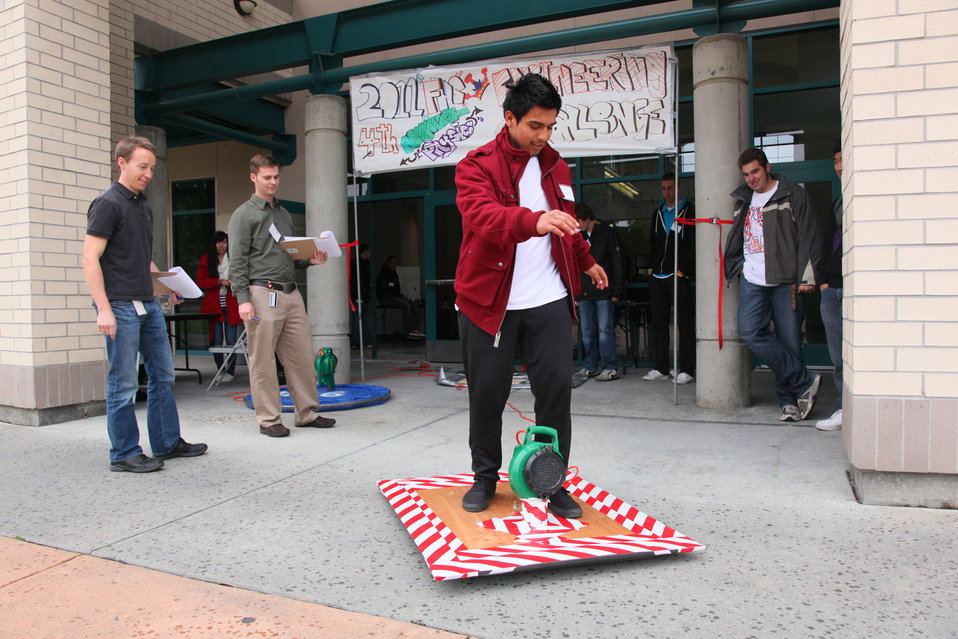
4th Annual Folsom High School Engineering Challenge

FOLSOM, Calif. (May 17, 2011) – Judges Eric Kennedy (left) and Thomas Savage (second from left) admire the talents of Folsom High’s Johnny Mannuel on a hover craft he and his team designed and built for the physics and engineering event at Folsom High here May 17. Kennedy and Savage were two of three judges from the U.S. Army Corps of Engineers Sacramento District’s engineering division that participated in the school’s 4th annual Folsom High School Engineering Challenge. The students displayed various rocket, solar, hover, catapult, air compression, electro, magnetic and light-bending projects with detailed narratives of their experience for the judges.